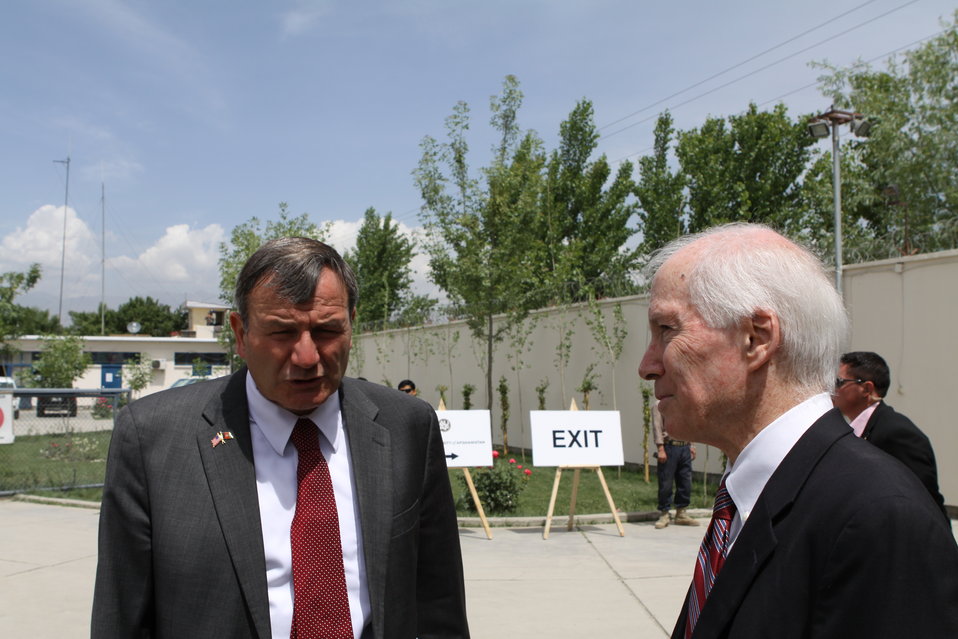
100526 AUAF Graduation 021